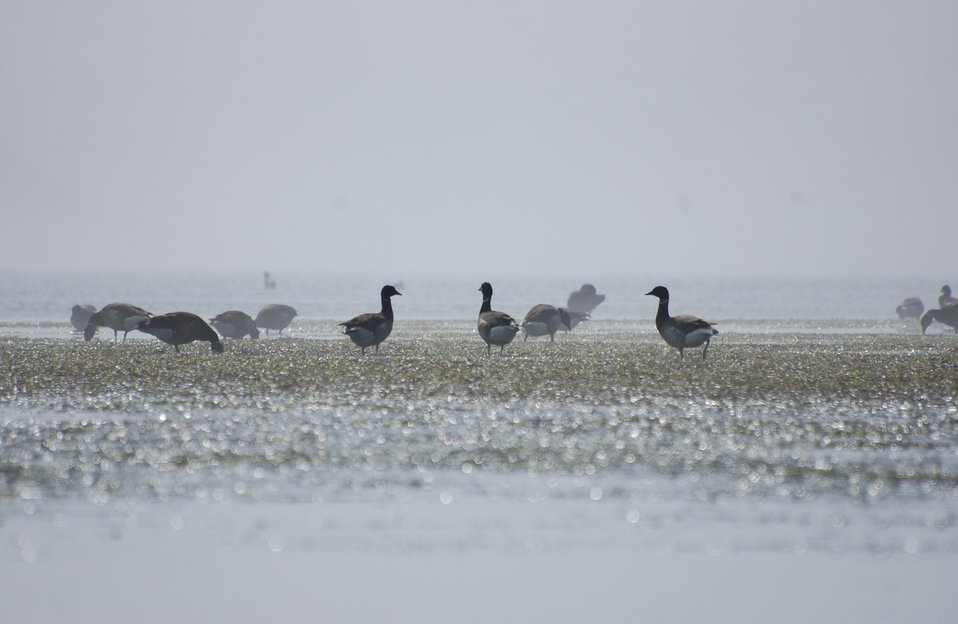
Brant on eelgrass, Izembek Lagoon, Izembek National Wildlife Refuge
Photo by Kristine Sowl, USFWS, Public domain